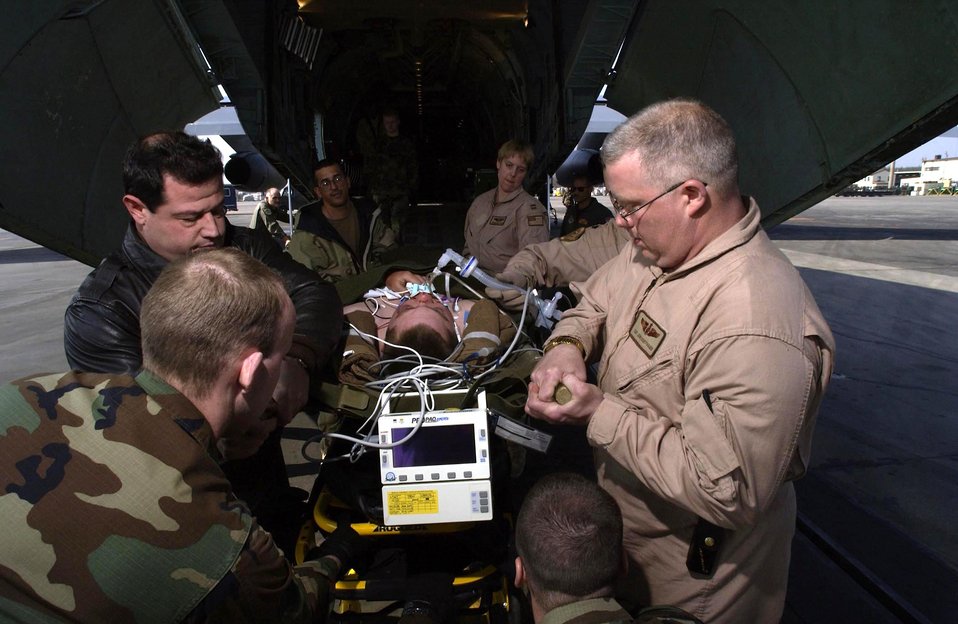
Aeromedical evacuation

RAMSTEIN AIR BASE, Germany -- Tech. Sgt. John Schiffhauer (right) of the 932nd Aeromedical Evacuation Squadron at Scott Air Force Base, Ill., and members of the 86th Aeromedical Staging Facility here unload a wounded soldier from a C-141 Starlifter on March 24. Twelve soldiers wounded during Operation Iraqi Freedom were evacuated to Germany for additional medical treatment.